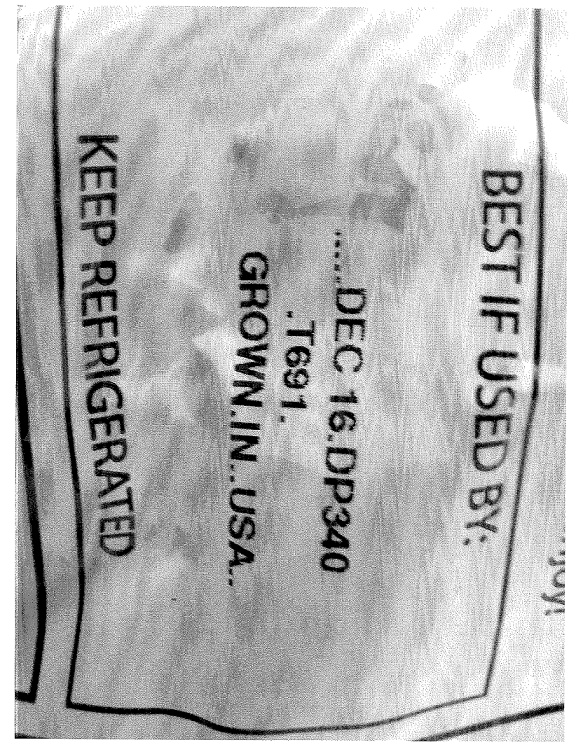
RECALLED - Fresh Spinach

December 23, 2011 - SAvon Heights Mushrooms, Inc. Recalls Fresh Spinach Because of Possible Health Risk For additional information, please refer to the company issued press release available on FDA's web site at www.fda.gov/Safety/Recalls/UCM285071